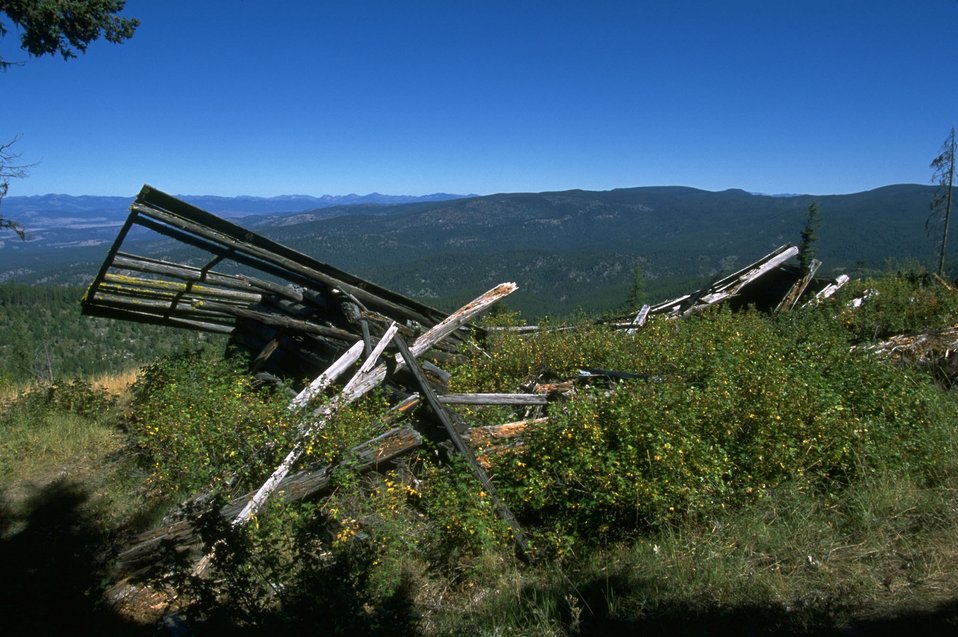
Old cabin in Coloma